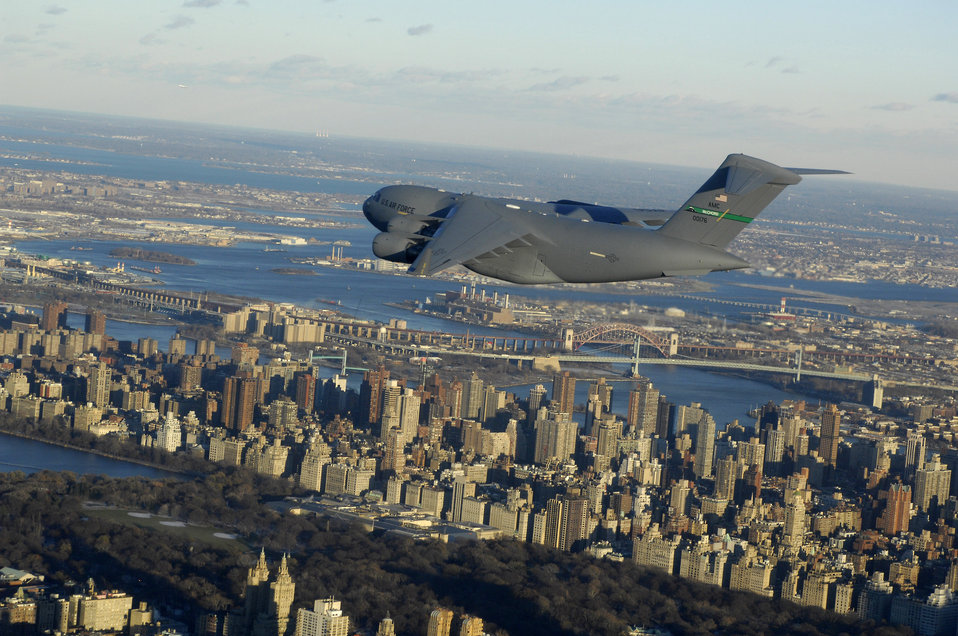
A Globemaster goes green

A C-17 Globemaster III flies over New York city after completing the first transcontinental flight on synthetic fuel. The airlifter flew from McChord Air Force Base, Wash., to McGuire AFB, N.J.